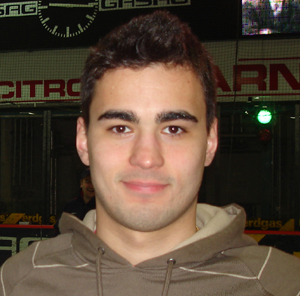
Deutsch: de:Daniar Dshunussow